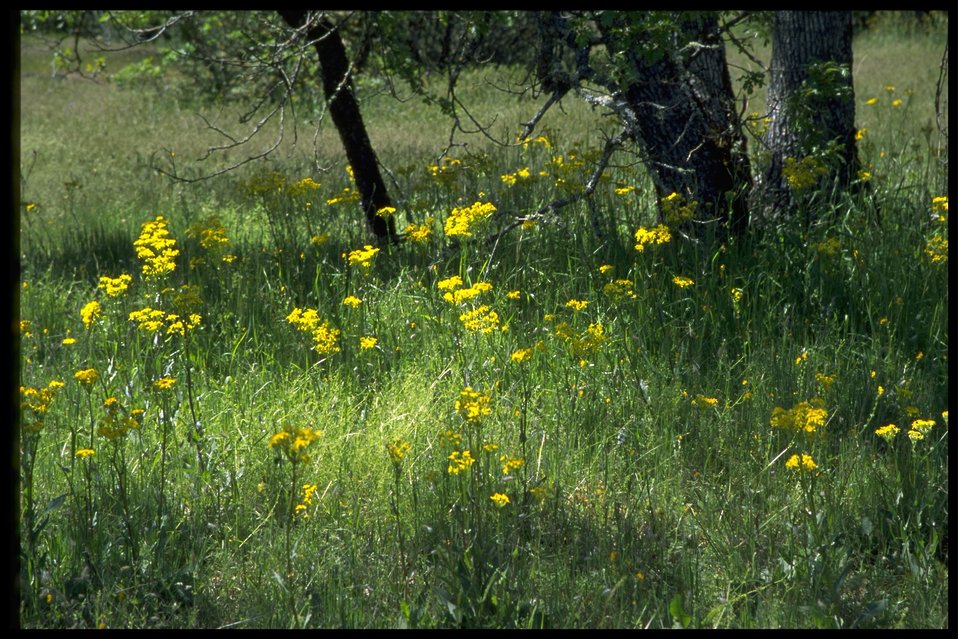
Farshot of Senecio intefermis.